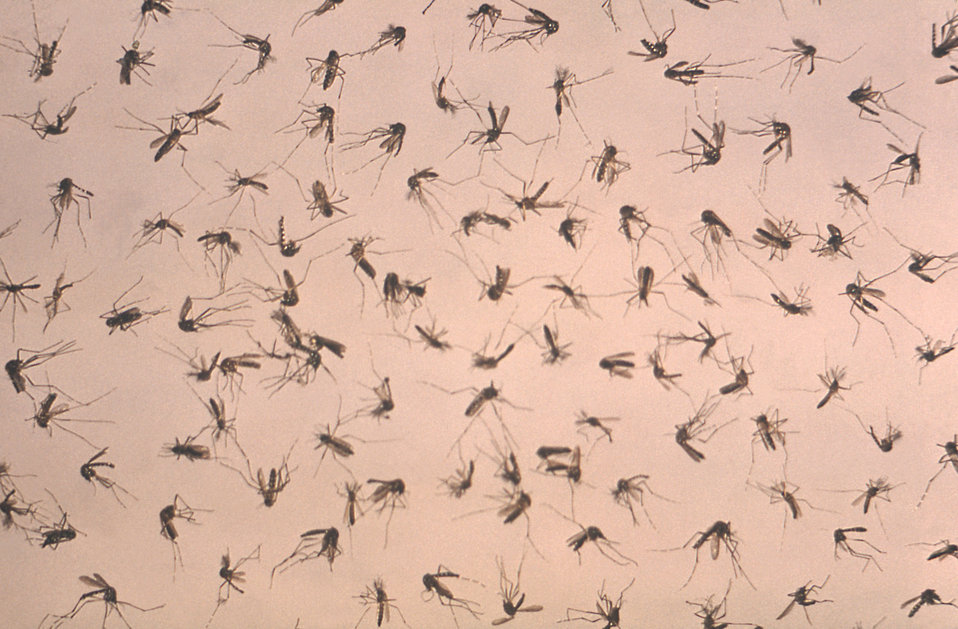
This image depicts a uniformly-scattered grouping of deceased mosquitoes, which was about to undergo a laboratory analysis in order to determine the specie specific distribution within this collected population.